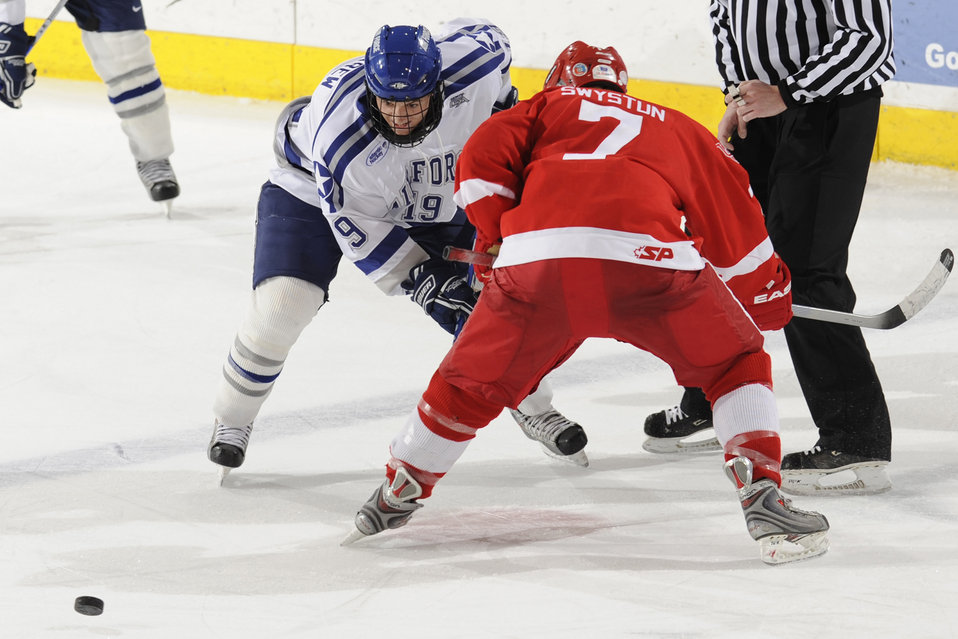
Lamoureux scores two in 3-1 win over Calgary

U.S. Air Force Academy, CO -- Junior forward Derrick Burnett wins a face-off against Calgary left winger Tyler Swystun during the Falcons-Dinos exhibition game at the Cadet Ice Arena Oct. 5, 2009. Burnett assisted Air Force's Jacques Lamoureux on two goals, leading Air Force to a 3-1 win.